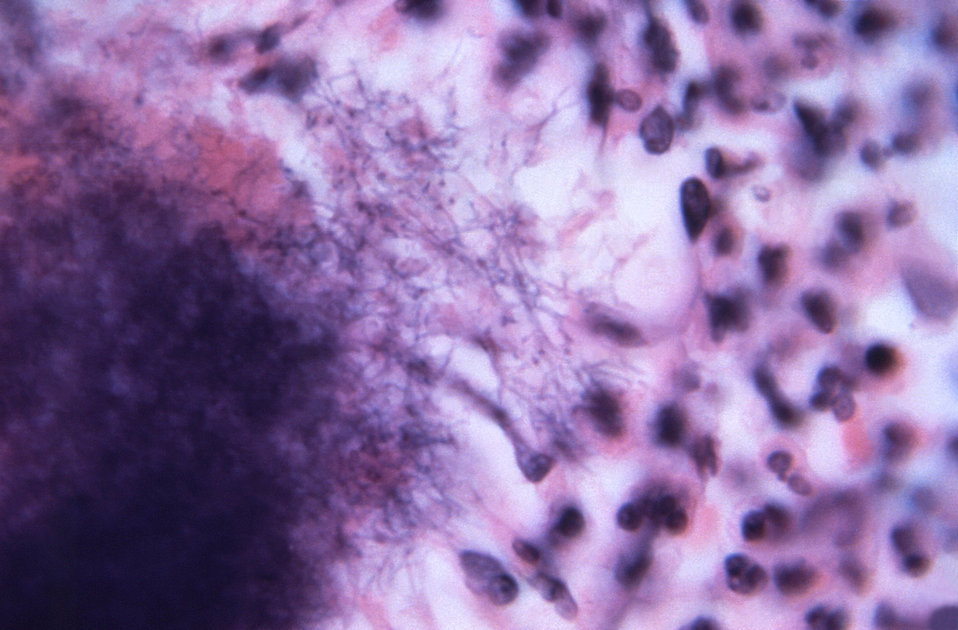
Under a magnification of 900x, this Gram-stain photomicrograph of an unknown tissue specimen revealed some of the ultrastructural histopathology associated with an actinomycotic mycetoma due to the Gram-positive bacterium, Nocardia madurae.